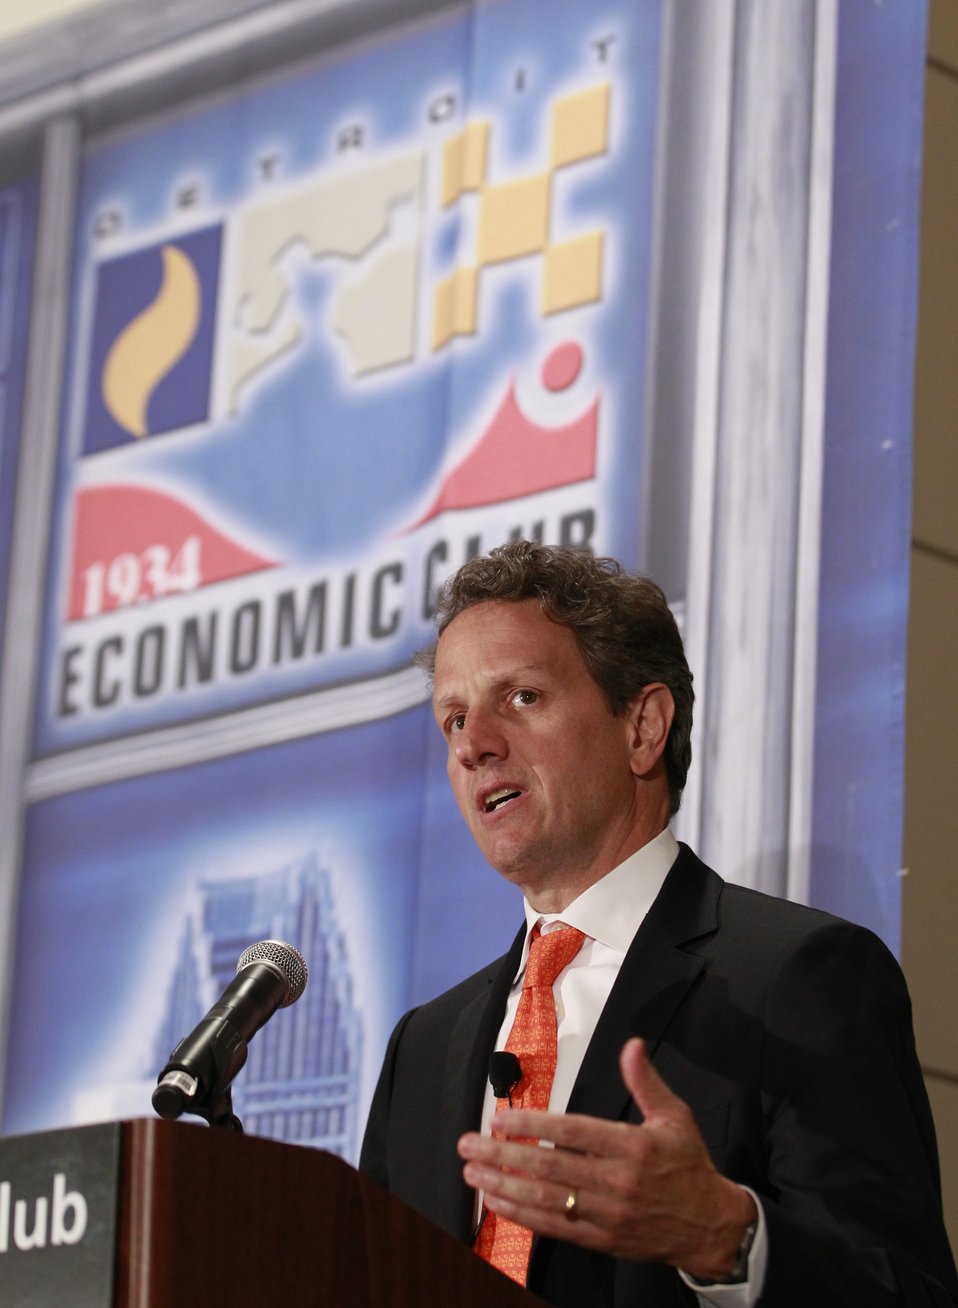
Secretary Geithner Visits Detroit

Secretary Tim Geithner makes opening remarks before a moderated discussion at a Detroit Economic Club meeting in Detroit on Thursday, April, 28, 2011.